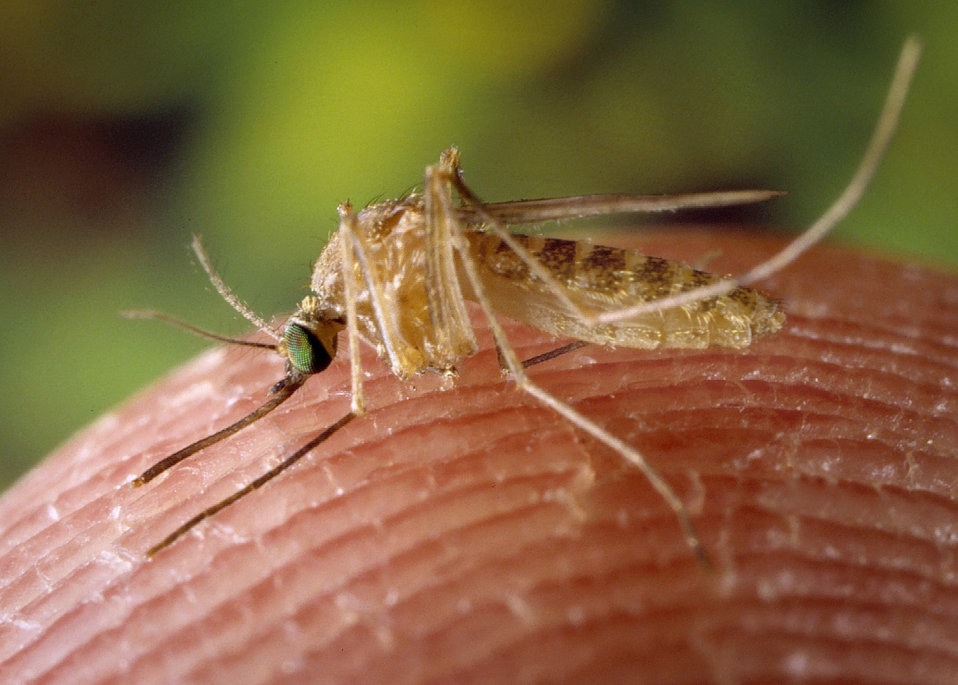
A Culex quinquefasciatus mosquito on a human finger.